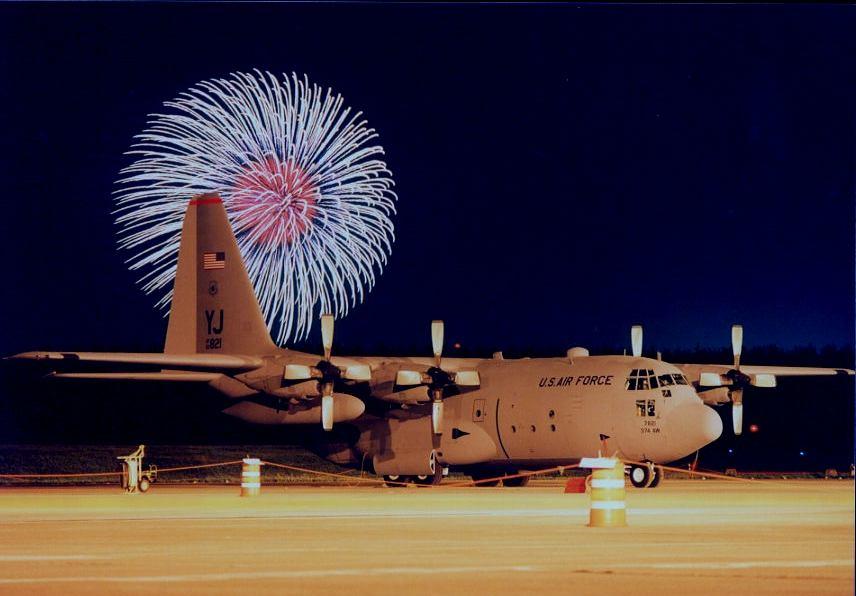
C-130 Hercules 09